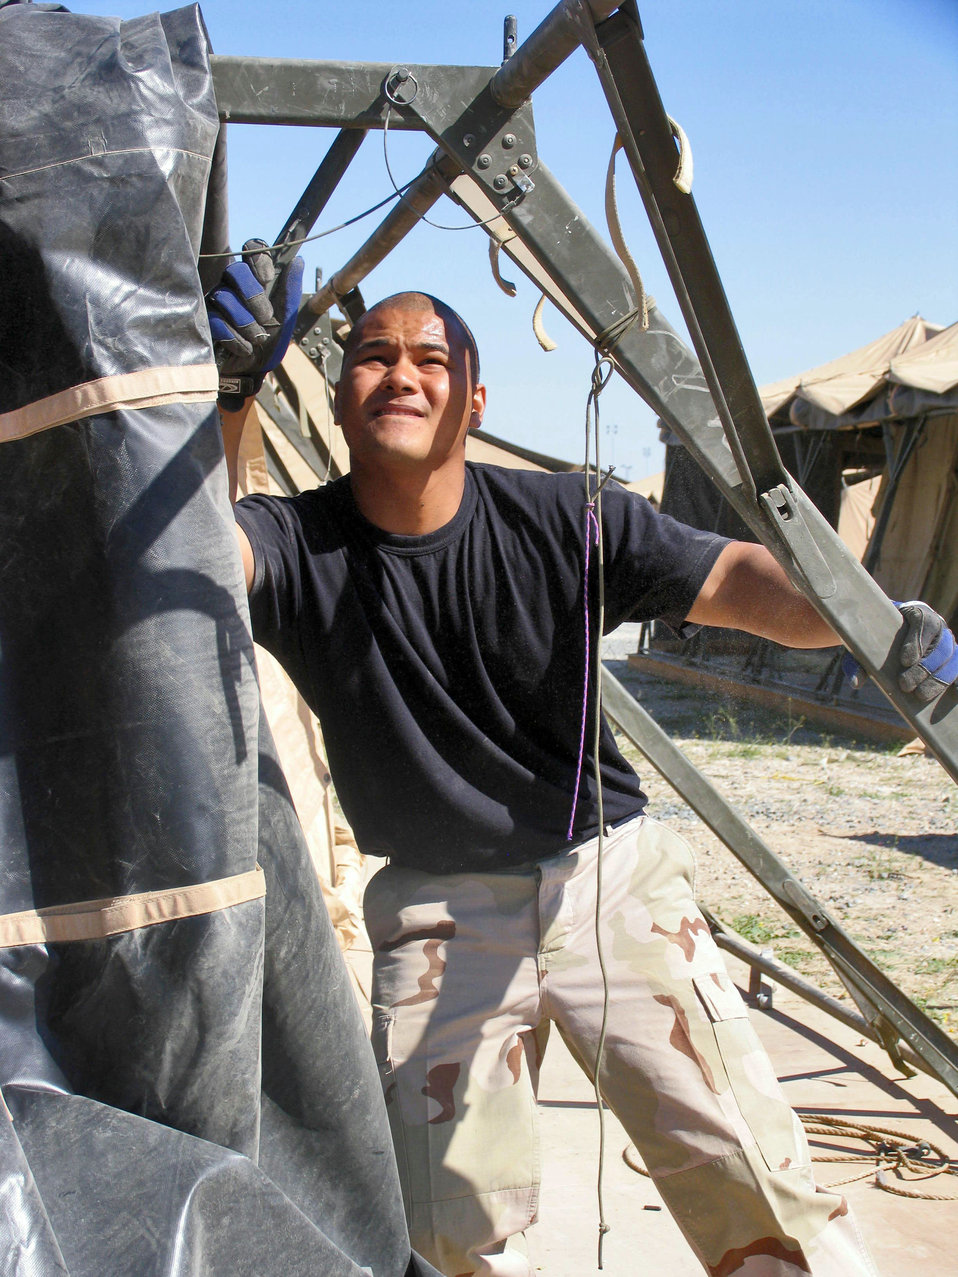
Tent teardown

Staff Sgt. Sean Villagomez of the 386th Expeditionary Civil Engineer Squadron helps take down a tent Saturday, Feb. 25, 2006. More than 90 people from the squadron helped take down 17 tents no longer needed for billeting. There are more than 160 tents still standing that will be taken down as hard billets become available. The 386th Air Expeditionary Wing plans to have everyone in hard billets within the next two years. Sergeant Villagomez is deployed from Yokota Air Base, Japan.